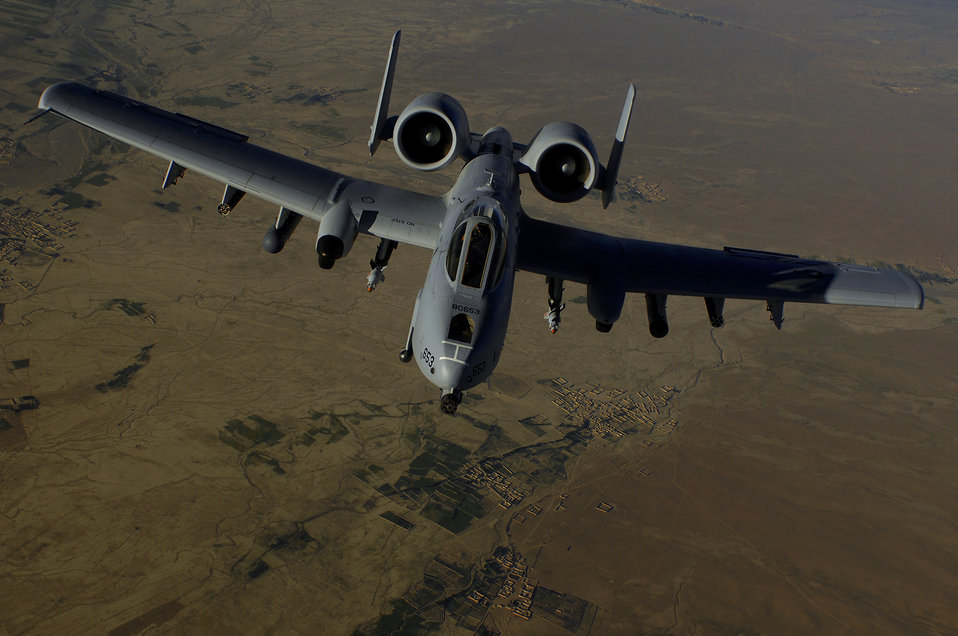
Feb. 23 airpower summary: A-10s provide air cover

An A-10 Thunderbolt II aircraft moves into position to receive fuel from a KC-135 Stratotanker during a mission over Afghanistan. A-10s provide top cover and close-air support to coalition forces in Afghanistan and Iraq.